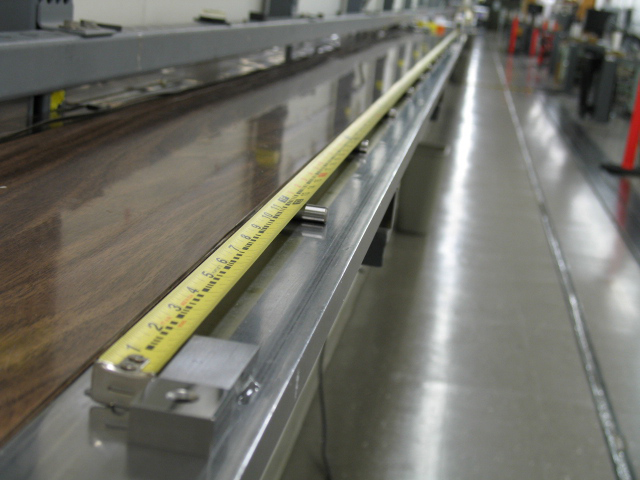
Calibrating Measuring Tapes

Researchers calibrate measuring tapes of all types in the 60-meter long NIST tape tunnel.